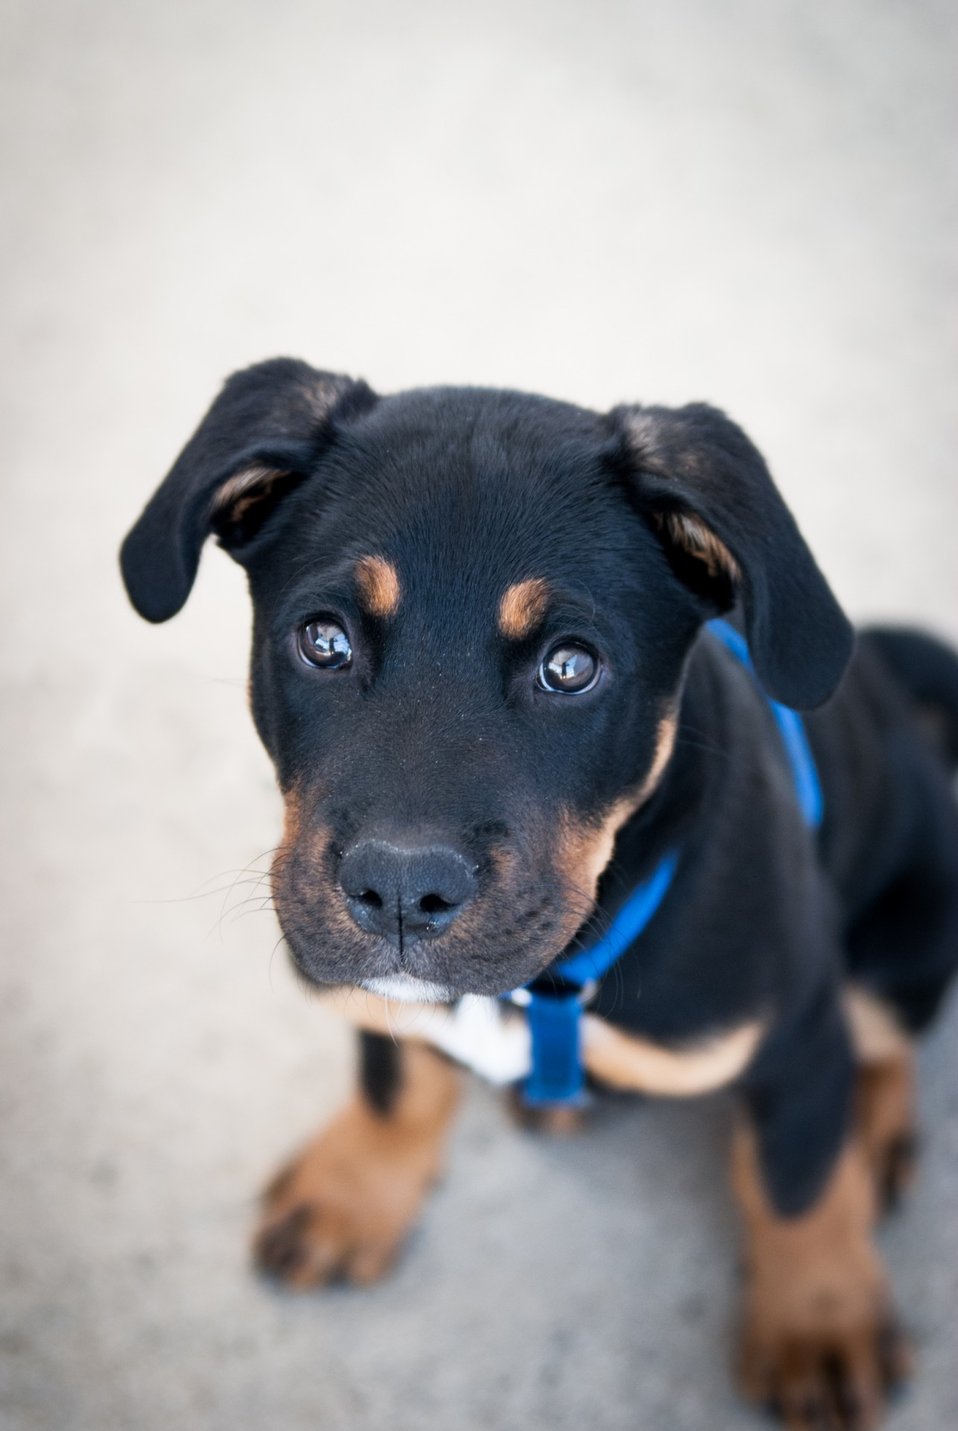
Puppy

Adorable puppy.